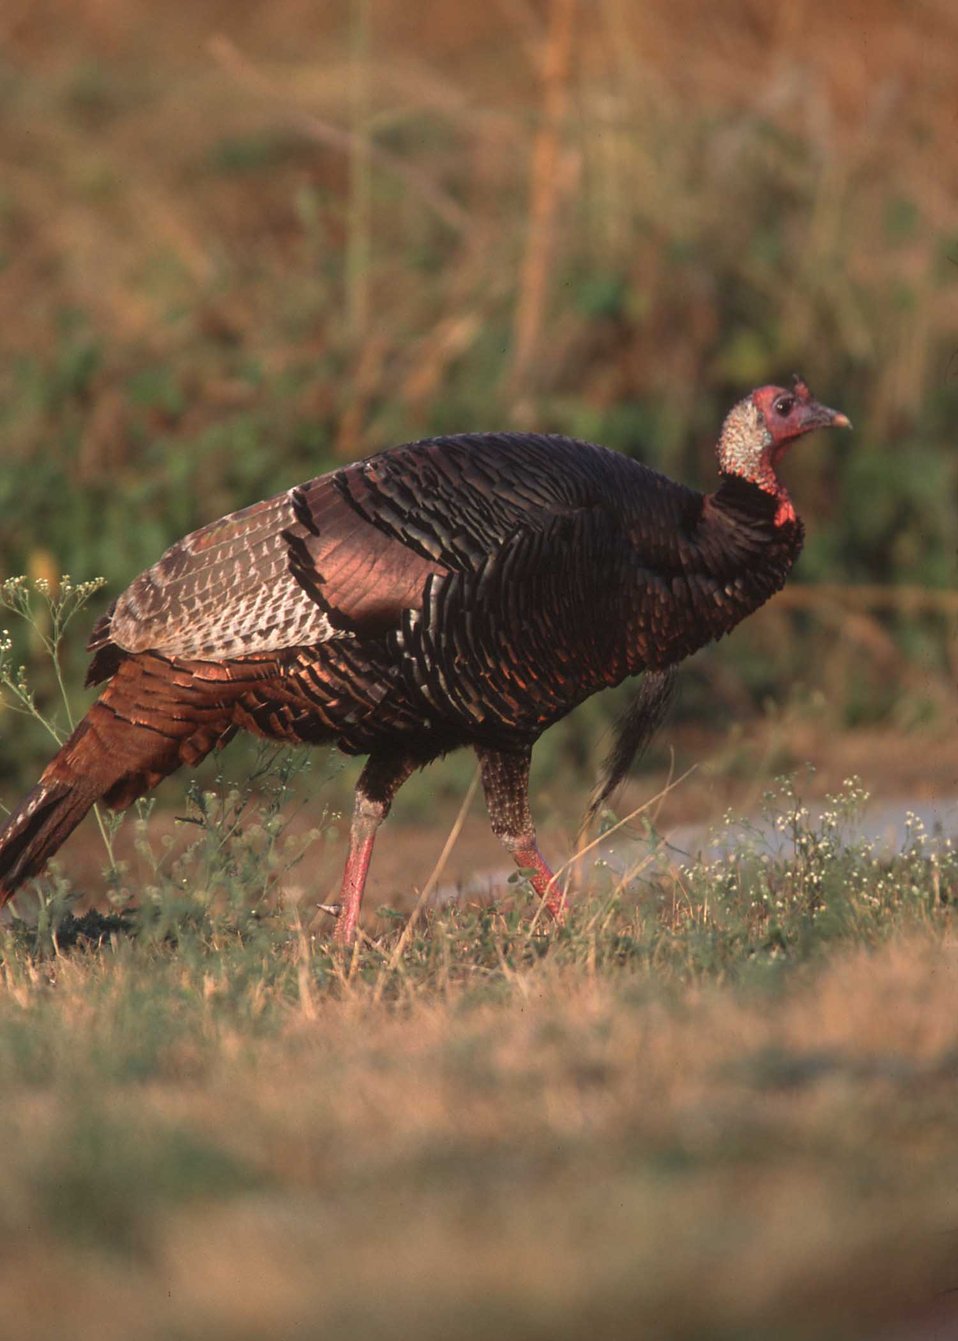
Wild turkey in Hawaii.